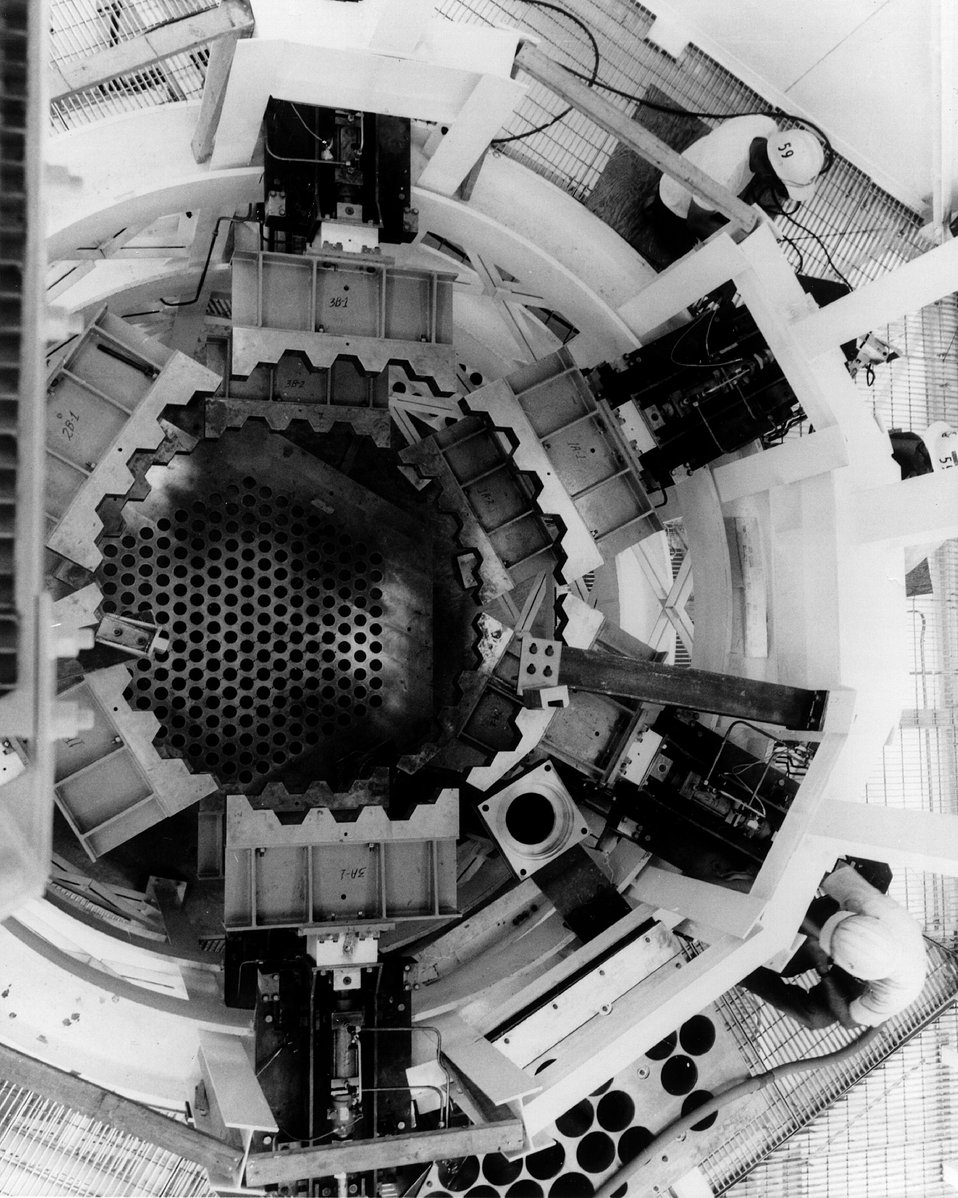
This Fast Flux Test Facility (FFTF) core mechanical mockup has been installed in the High Temperature Sodium Facility. c. 1972.